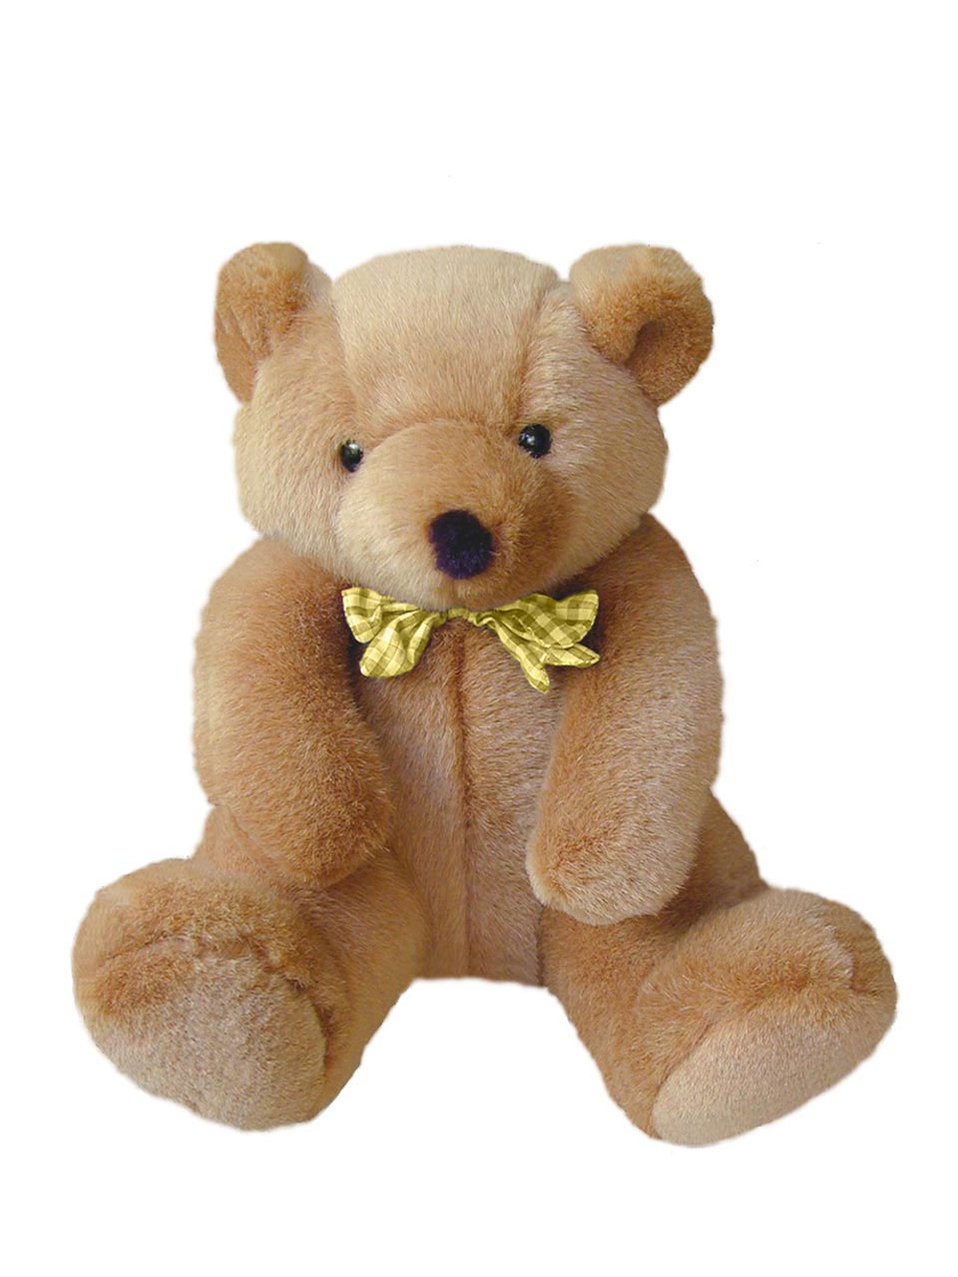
Teddy bear with yellow check bow.